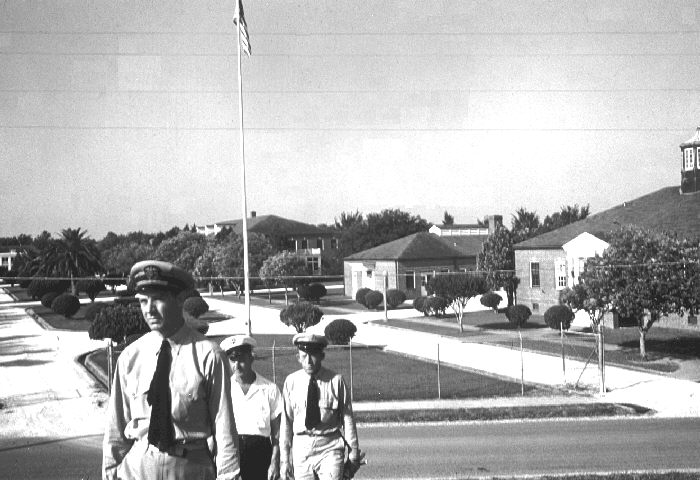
PHS Quarantine Station